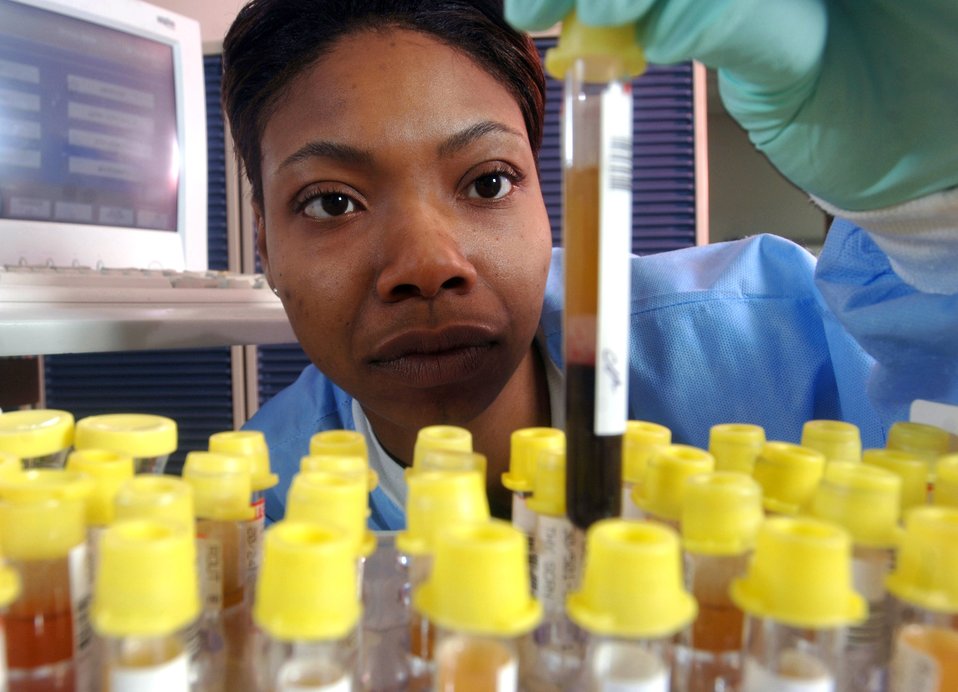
Medical lab techs

Senior Airman Shavone Simmons checks specimens before running a test at Yokota Air Base, Japan, on Thursday, May 11, 2006. Airman Simmons is a medical laboratory technician with the 374th Medical Group. Her laboratory performs more than 48,000 tests annually.